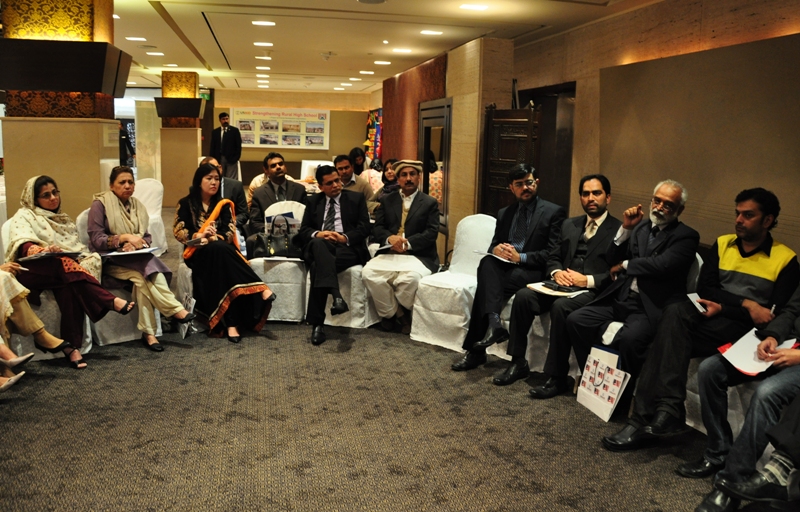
Education Workshop 233